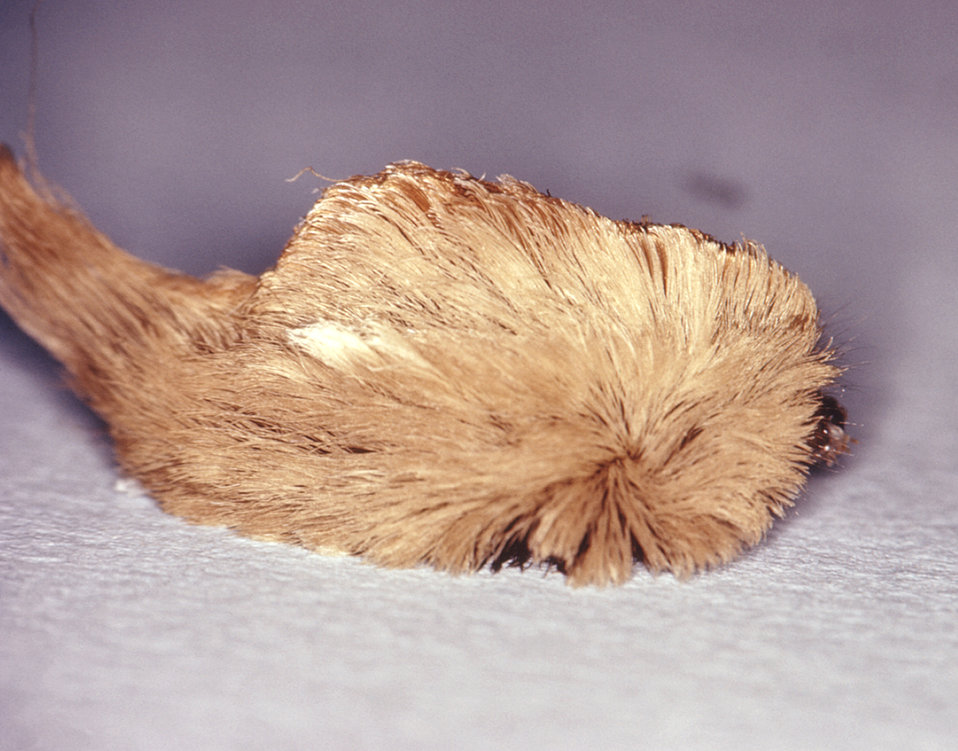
This is a puss caterpillar, Megalopyge opercularis, which is an urticating, or hive-producing caterpillar.